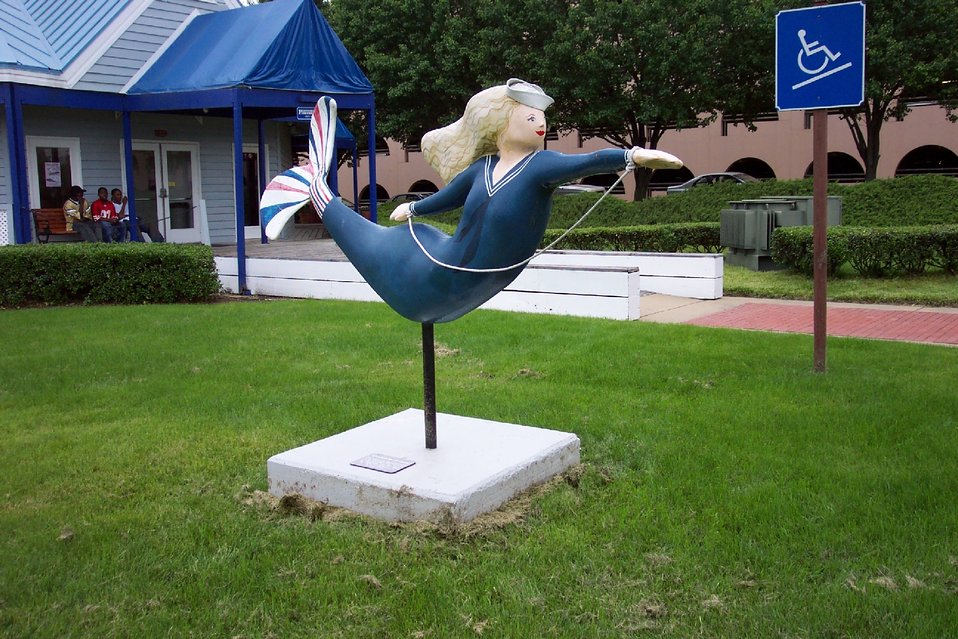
A Portsmouth sailor mermaid.